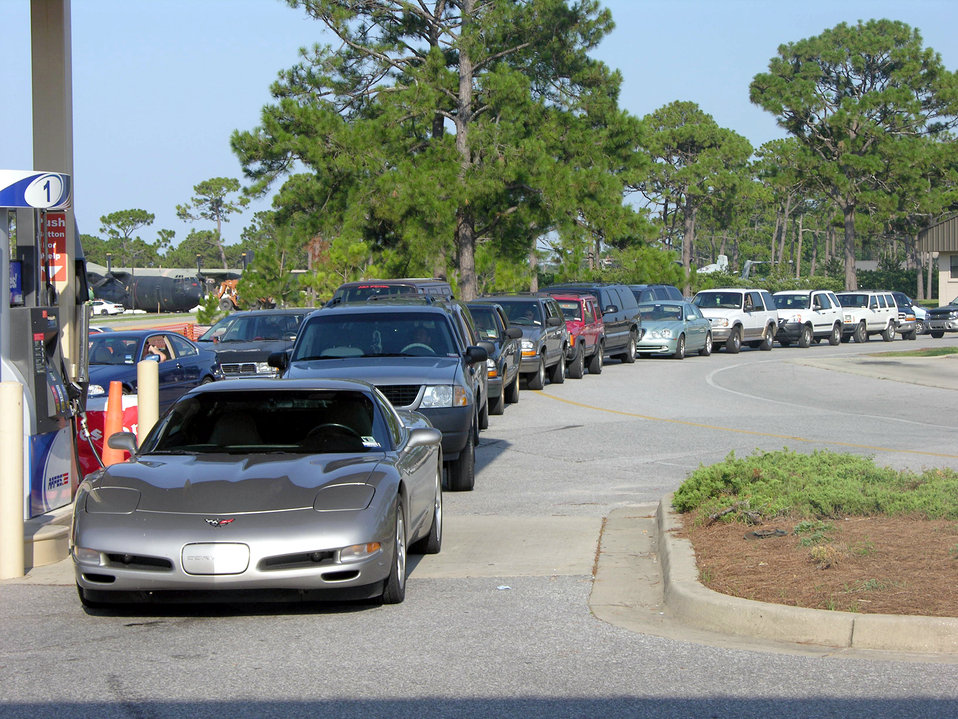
Hurricane Dennis eyes Gulf Coast, packing major winds

HURLBURT FIELD, Fla. -- Lines at the gas station here snarled traffic July 8 as people prepared to evacuate before Hurricane Dennis made landfall. Gas, water, ice, batteries and hurricane survival staples grew scarce. Base officials ordered the evacuation of all but mission-essential personnel July 8, which should reduce the 16,000-plus population here to fewer than 200 people.